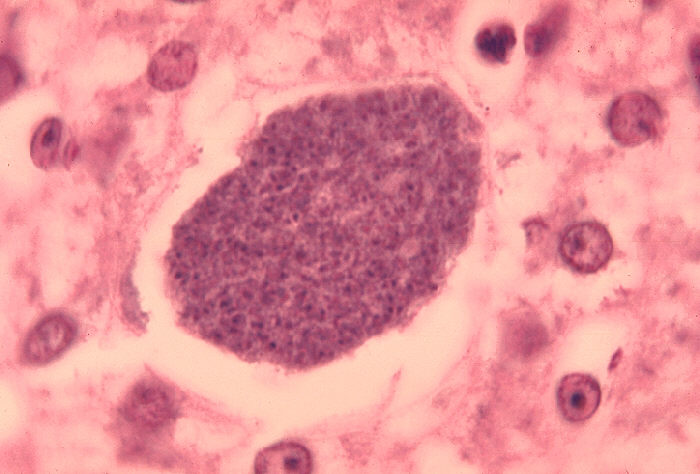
Histopathology of malaria exoerythrocytic forms in liver.